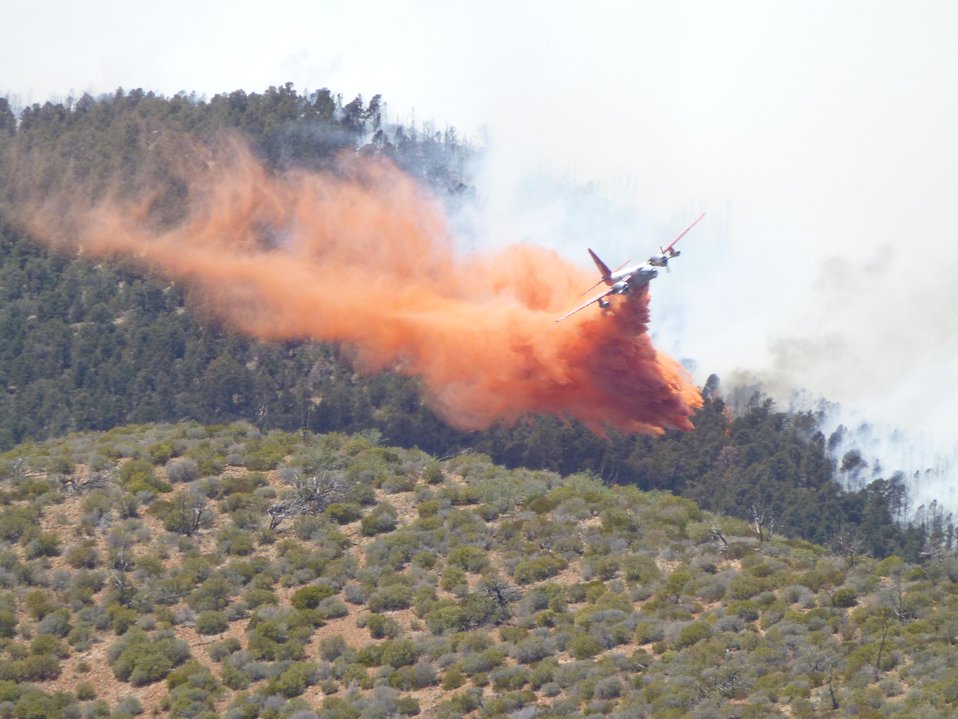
A P2V Neptune air tanker makes a fire retardant drop on Carpenter Fire. The Carpenter Fire in the Toiyabe National Forest near Humboldt, NV was caused by a lightning strike on Jul. 1, 2013. The fire has consumed nearly 27,881acres and is presently 70% contained.